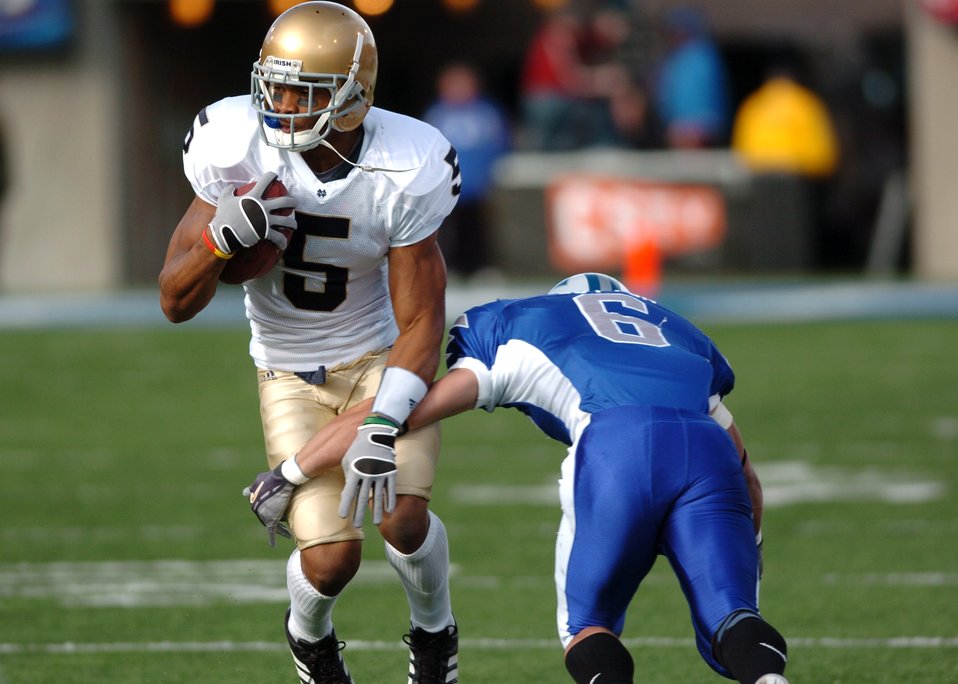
Side Steps

Notre Dame wide receiver Rhema McKnight side-steps Air Force cornerback Chris Sutton on a pass from quarterback Brady Quinn before picking up 20 yards and a first down. Quinn threw for 207 yards and four touchdowns as the 8th-ranked Irish handily defeated the Falcons, 39-17.